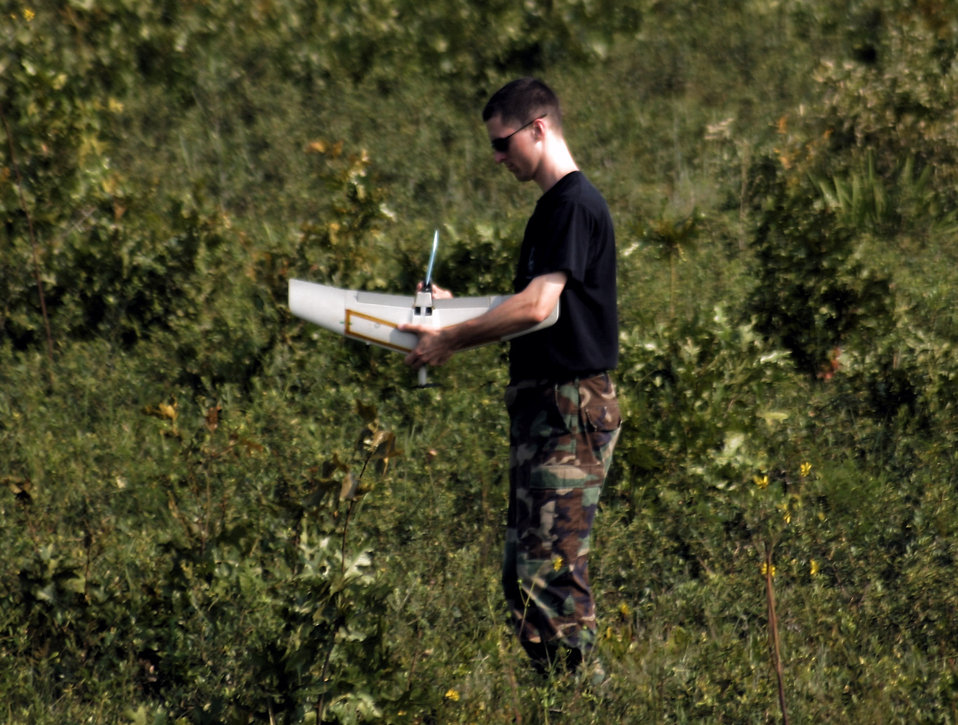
Coalition exercise

A Battlefield Airman Targeting Micro Air Vehicle is recovered July 25 after it successfully lands during Exercise Bold Quest Plus at Eglin Air Force Base, Fla.